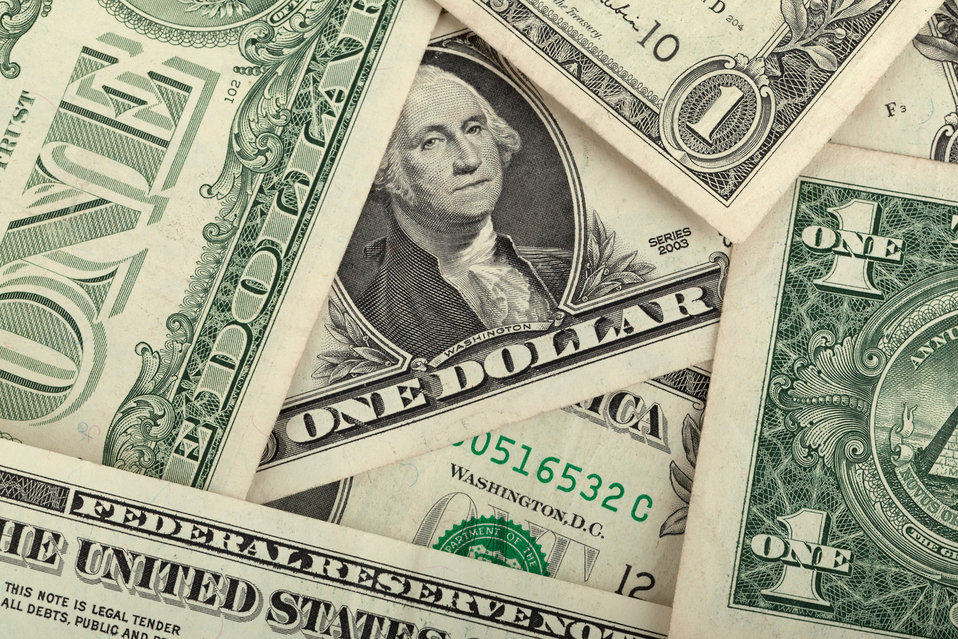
One dollar wallpaper.